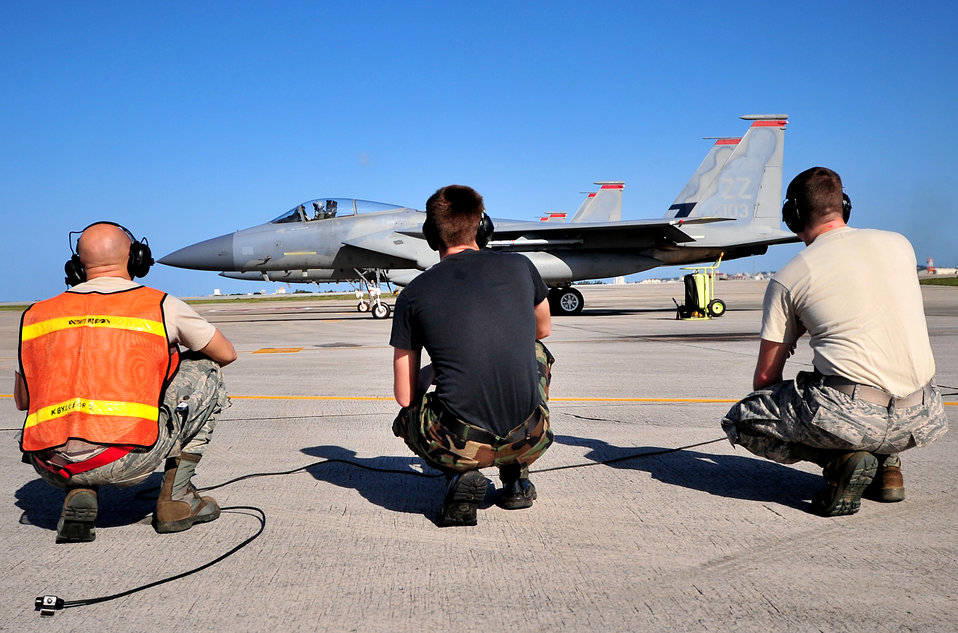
Joint Bilateral Training

Airmen from the 67th Fighter Squadron stay clear of an F-15C Eagle as the pilot prepares to taxi for take-off Feb. 23, 2010, at Kadena Air Base, Japan. Kadena Airmen were participating in joint bilateral training with other U.S. forces and the Japan Air Self Defense Force from Feb. 22 to 26.